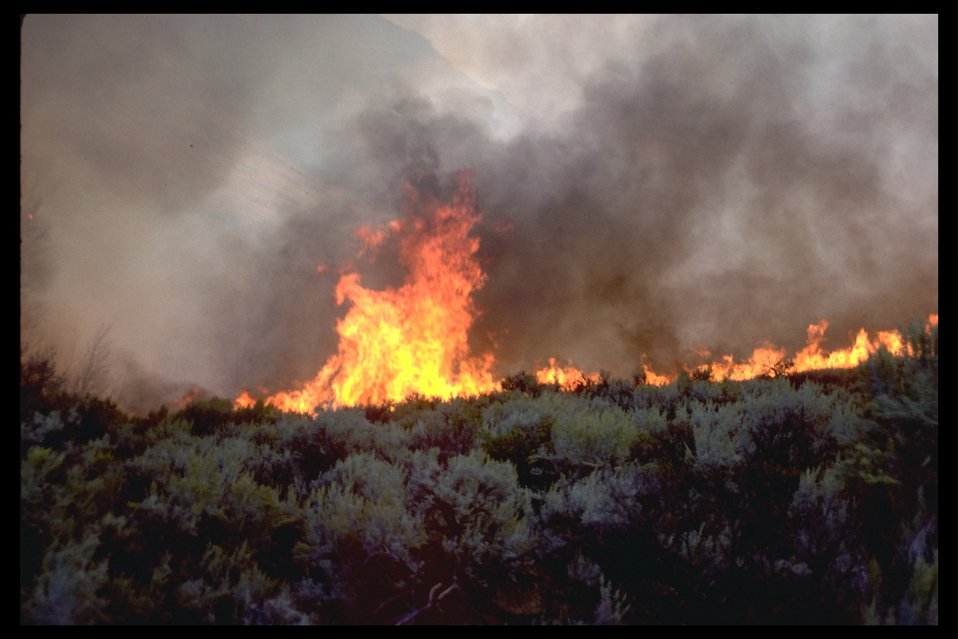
120 acre sage fire caused by hunters in the Pueblo Mountain WSA. (WSA 2-81)